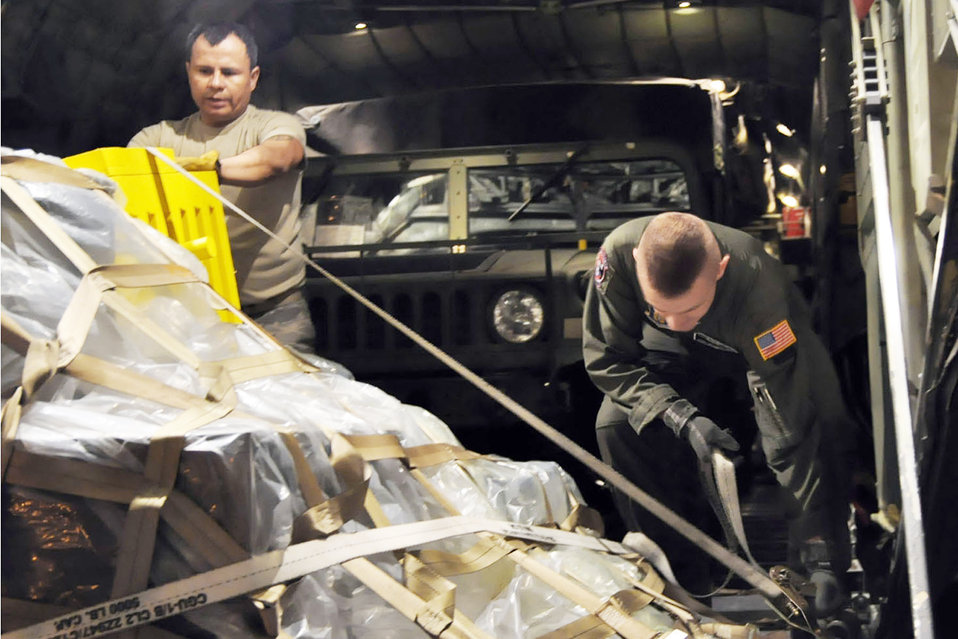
Medical mission to Haiti

Master Sgt. Steve Gonzales, crew chief, and Staff Sgt. Michael Culp, loadmaster, secure a pallet to the cargo deck of a C-130H Hercules Jan. 17, 2010, at Soto Cano Air Base, Honduras. The cargo is headed for Port-au-Prince, Haiti, as part of the international relief effort to aid the Haitian people. Both Airmen are part of a 12-person crew from the Air Force Reserve Command's 910th Airlift Wing based at Youngstown Air Reserve Station, Ohio.